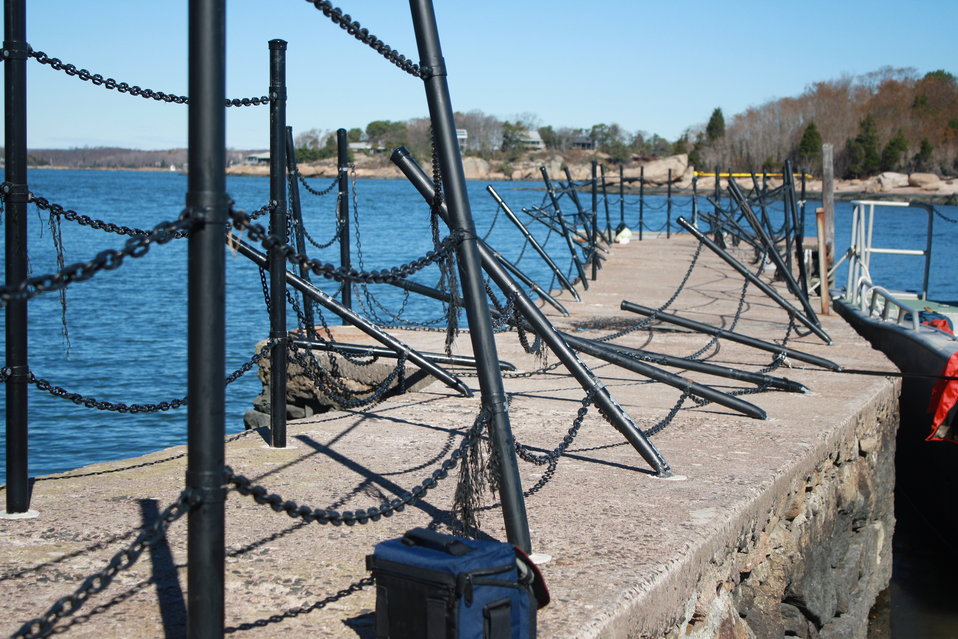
Damage at Stewart B. McKinney National Wildlife Refuge (CT)

A damaged fence at Outer Island after Hurricane Sandy.